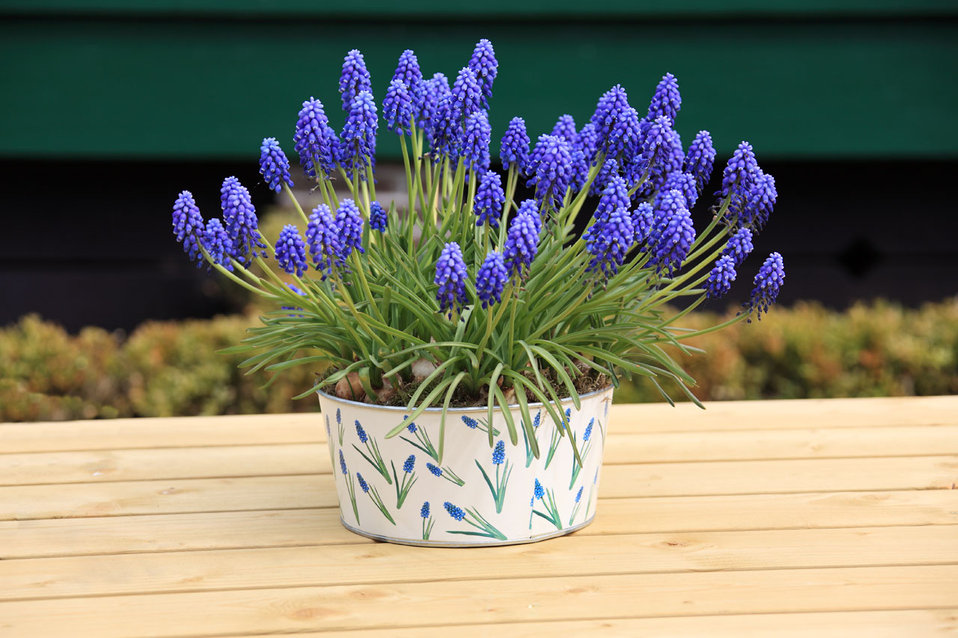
Grape hyacinth

Grape hyacint in pot on table.